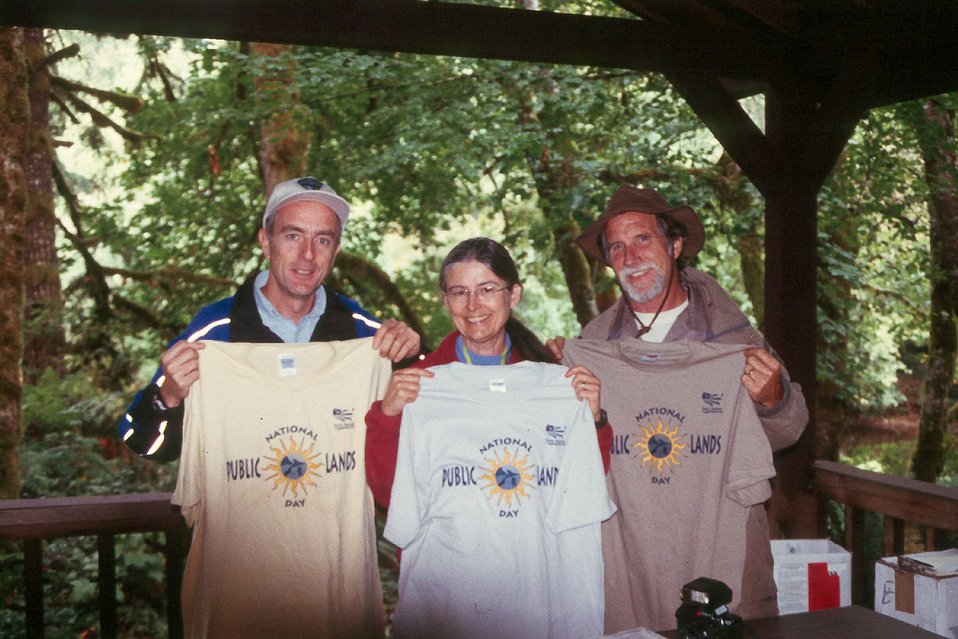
NPLD Organizers Mark Conley, Saundra Miles and Dennis Smith at Whittaker Creek Recreation Site.